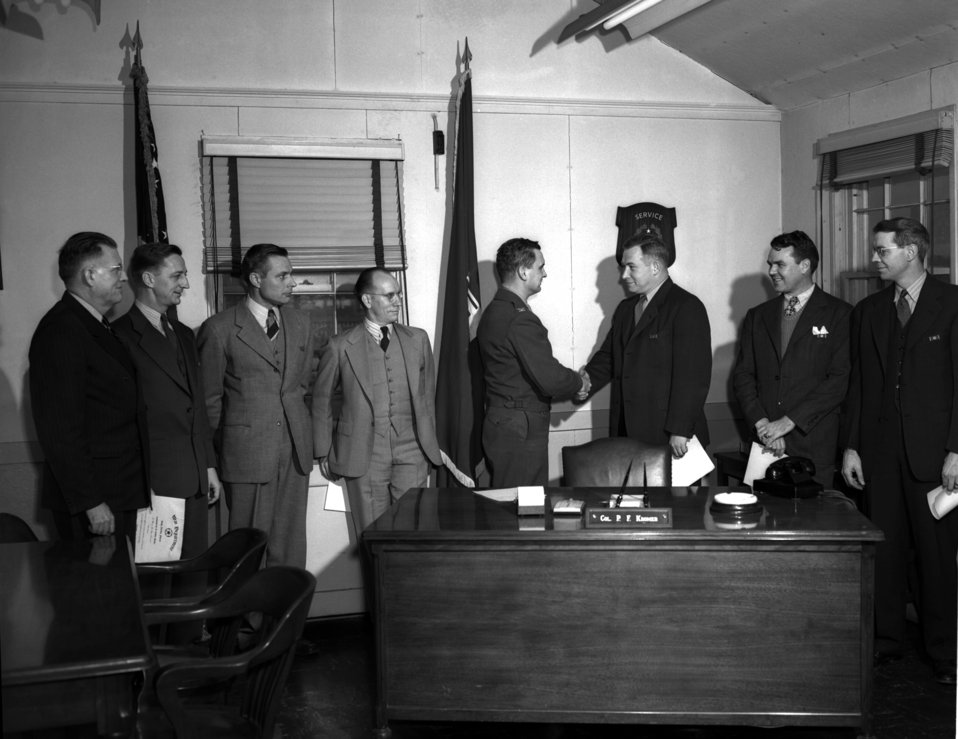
War Department Service Awards Col. Knomer Oak Ridge

3260-1 DOE photo Ed Westcott 1-20-1947 Oak Ridge Tennessee